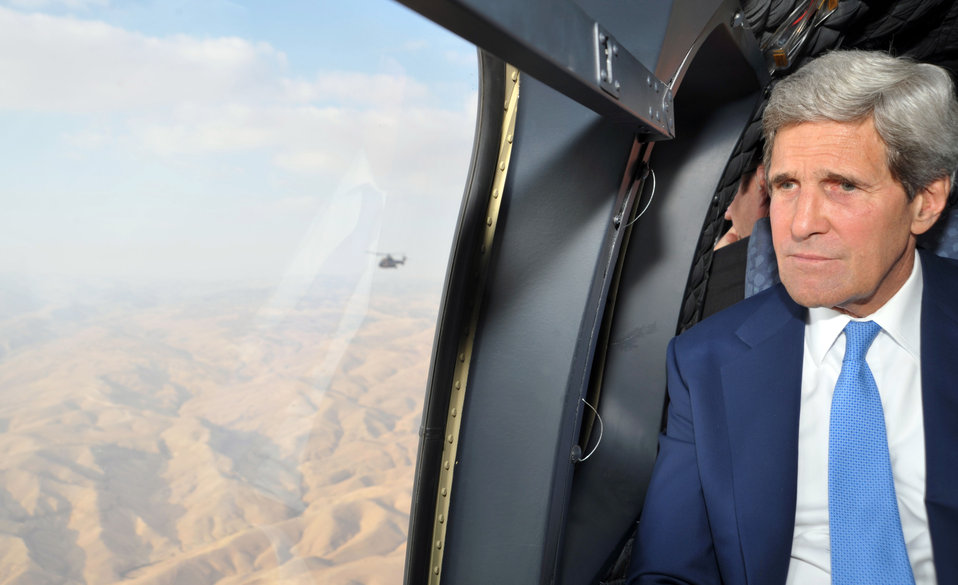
Secretary Kerry Flies From Amman to Ramallah

U.S. Secretary of State John Kerry and a second chopper carrying the traveling press corps fly from Amman, Jordan, to Ramallah, West Bank, to meet with Palestinian Authority President Mahmoud Abbas on July 19, 2013.